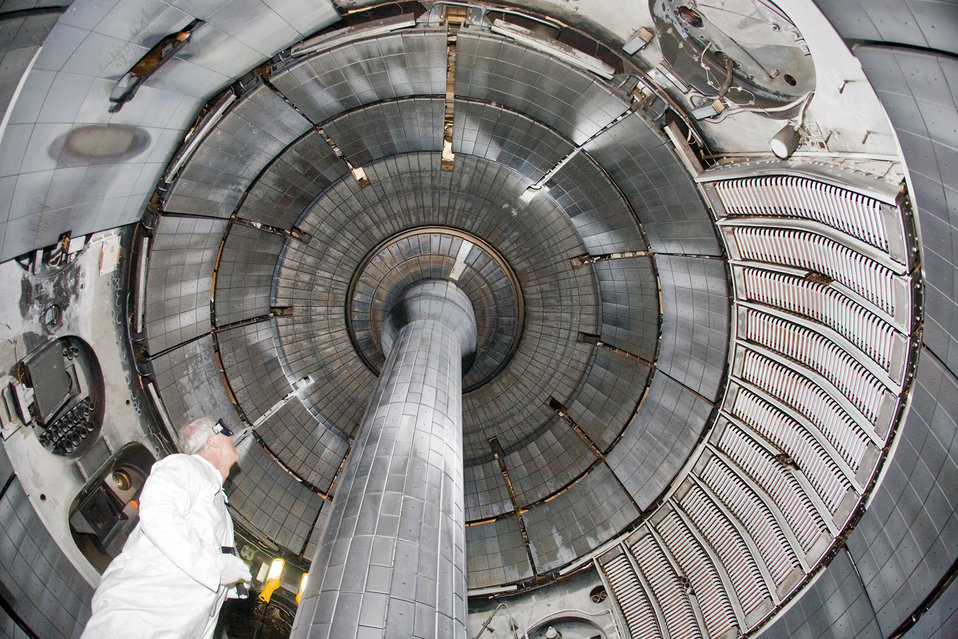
INTERIOR VIEW OF THE NATIONAL SPHERICAL TORUS EXPERIMENT VACUMM CHAMBER.

The National Spherical Torus Experiments is an innovative magnetic fusion device that was constructed the Princeton Plasma Physics in collaboration with the Oak Ridge National Lab, Columbia University and the University of Washington at Seattle. NSTX will be used to study the physics principles of spherically shaped plasmas-hot ionized gases which nuclear fusion will occur under the appropriate conditions of temperature, density, and confinement in a magnetic field.